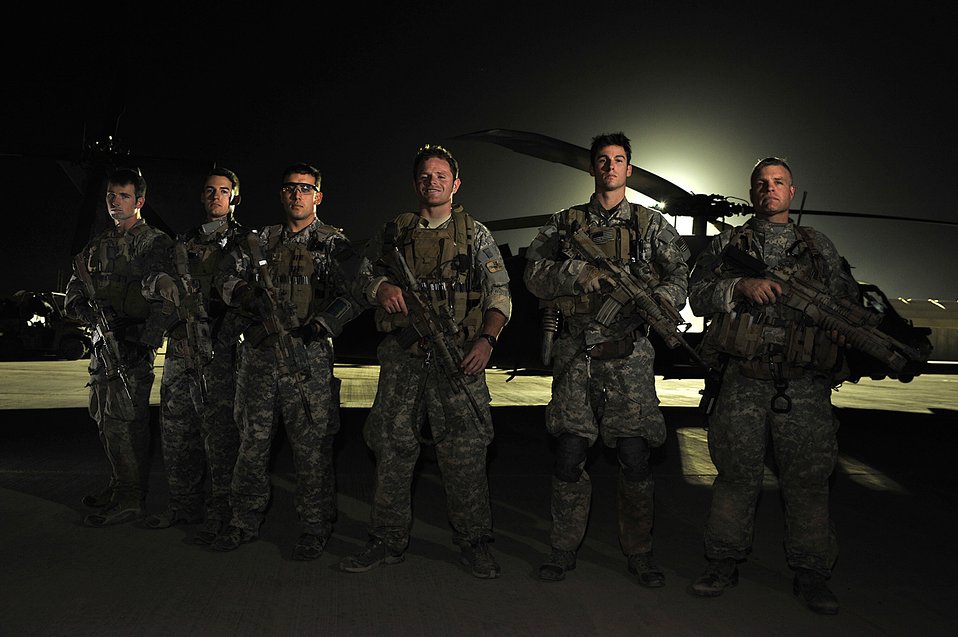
Do you feel lucky?

Pararescuemen from the 66th Expeditionary Rescue stand in front of their HH-60G Pave Hawk helicoper for a team photo Sept. 19 at Joint Base Balad, Iraq.